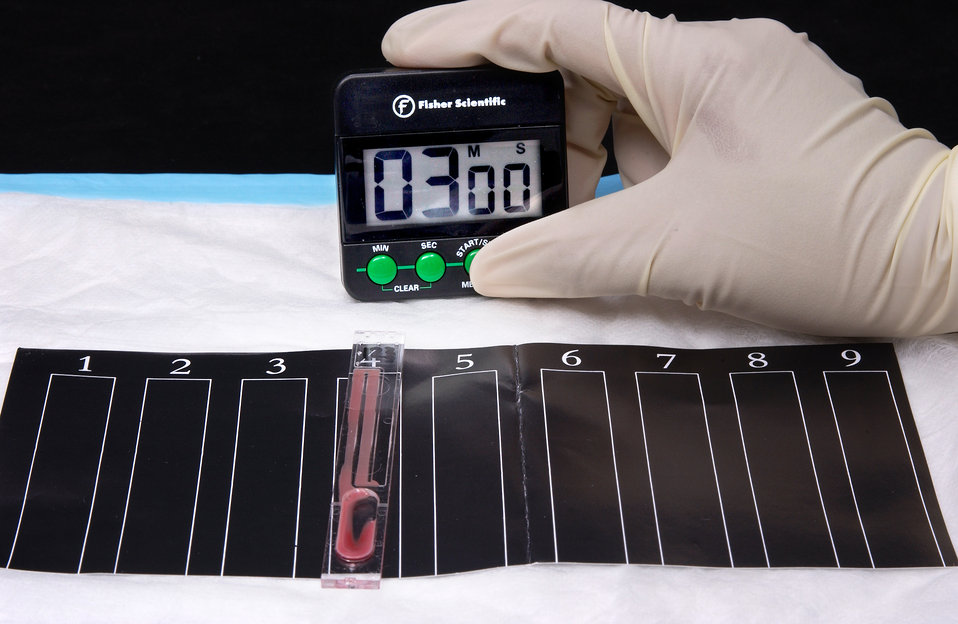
Allow the mixture of reagent and specimen to travel the length of the capillary channel into the viewing window. (Step 11 of 12)